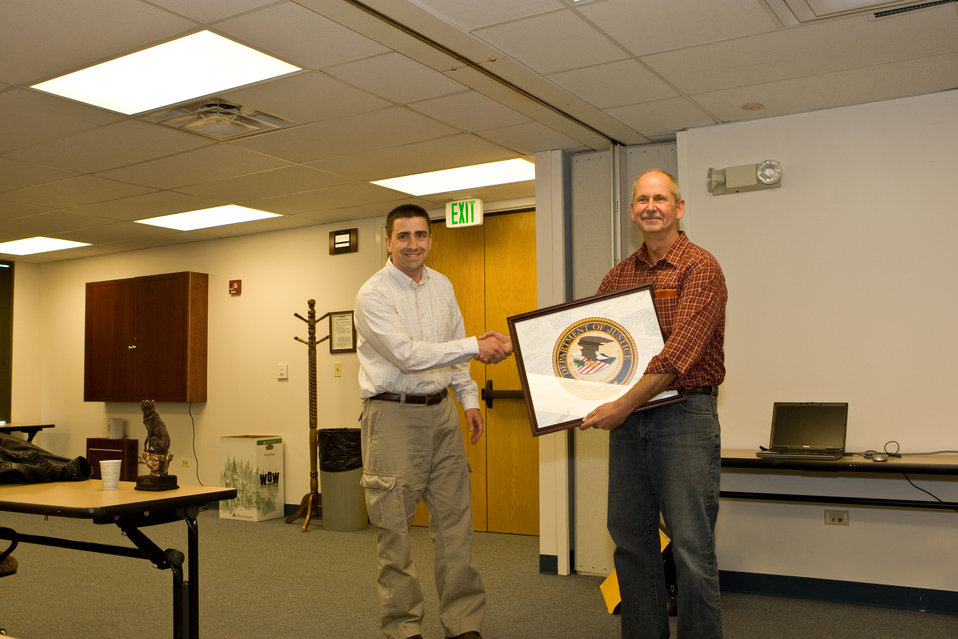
Ed Bangs Receives a Department of Justice Seal

On May 23rd, 2011 The U.S. Fish and Wildlife Service Mountain-Prairie Region honored three of the most influential individuals in wolf recovery in the Northern Rocky Mountains: Ed Bangs, Steve Fritts, and Margot Zallen. Ed Bangs started the event with an hour-long presentation, “Wolf Conservation: The Good, The Bad, and The Ugly.”

Following the presentation, Regional and National leadership recognized the imminent retirement of Ed, Steve, and Margot with a variety awards for their contributions.